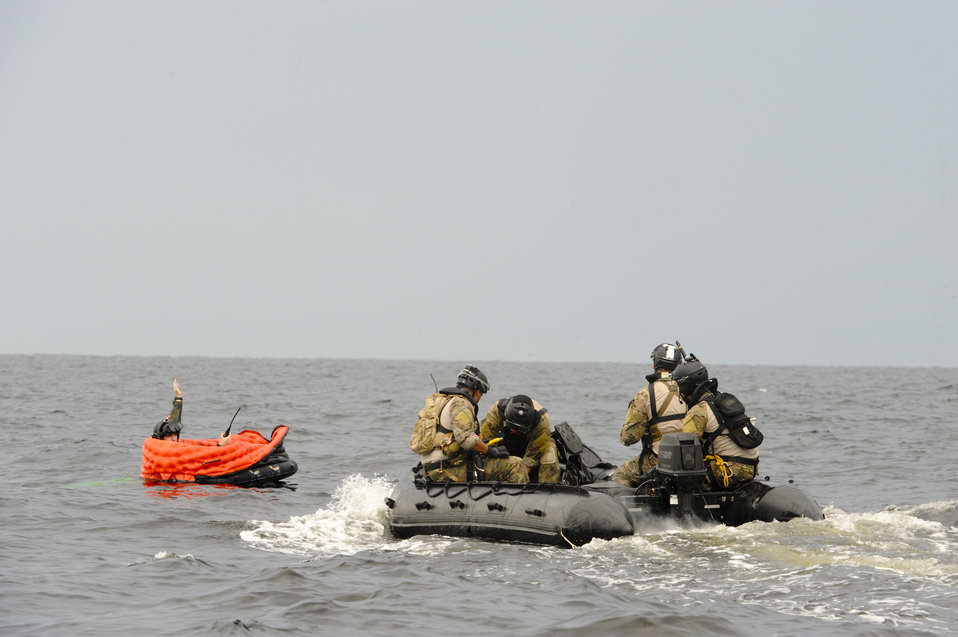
Water rescue

A team of pararescuemen from the 38th Rescue Squadron at Moody Air Force Base, Ga., approach Airman 1st Class Taras Ivaniuk, who played the role of a downed pilot, during a water rescue exercise in the Gulf of Mexico on Aug. 14, 2012. The exercise tested the members’ abilities to locate and rescue downed personnel in open water. Ivaniuk is with the 38th RQS.